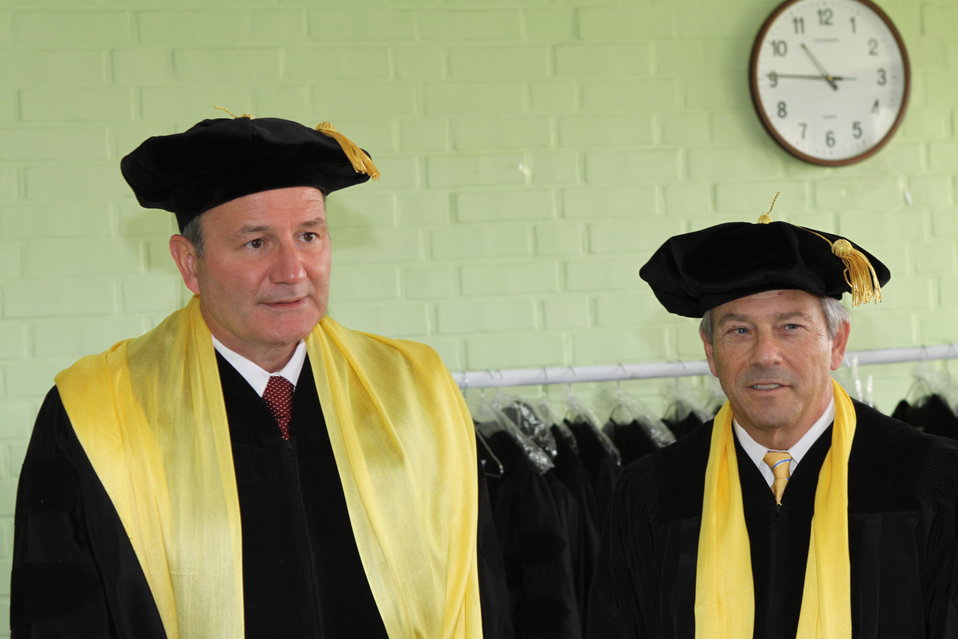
100526 AUAF Graduation 068